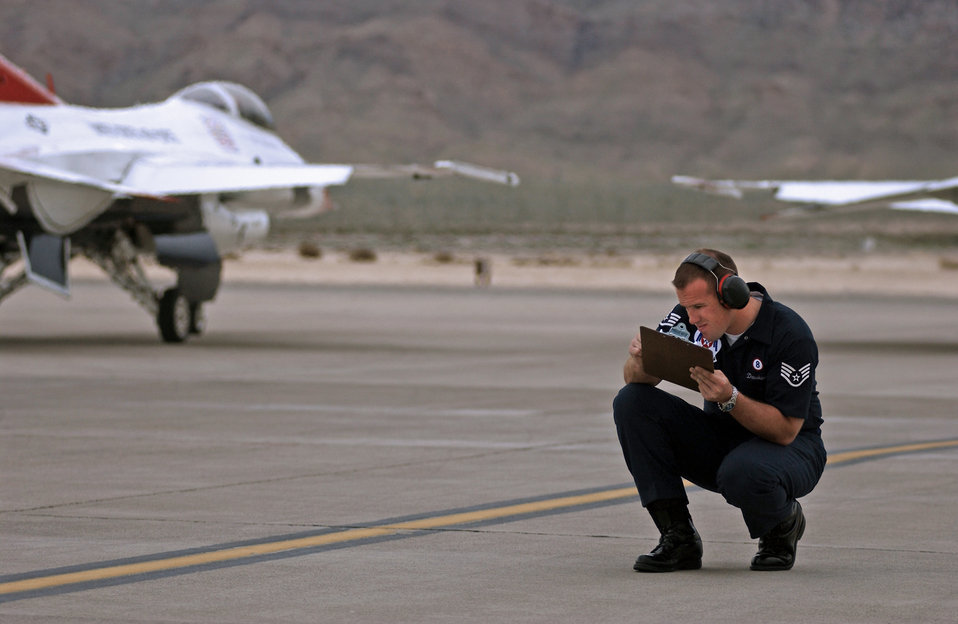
Finishing the paperwork

NELLIS AIR FORCE BASE, Nev. -- Staff Sgt. Mark Dawkins, an Air Force Thunderbird crew chief, completes some paperwork during ground operations at an over-the-field practice here recently. The team has been preparing for the 2005 season.